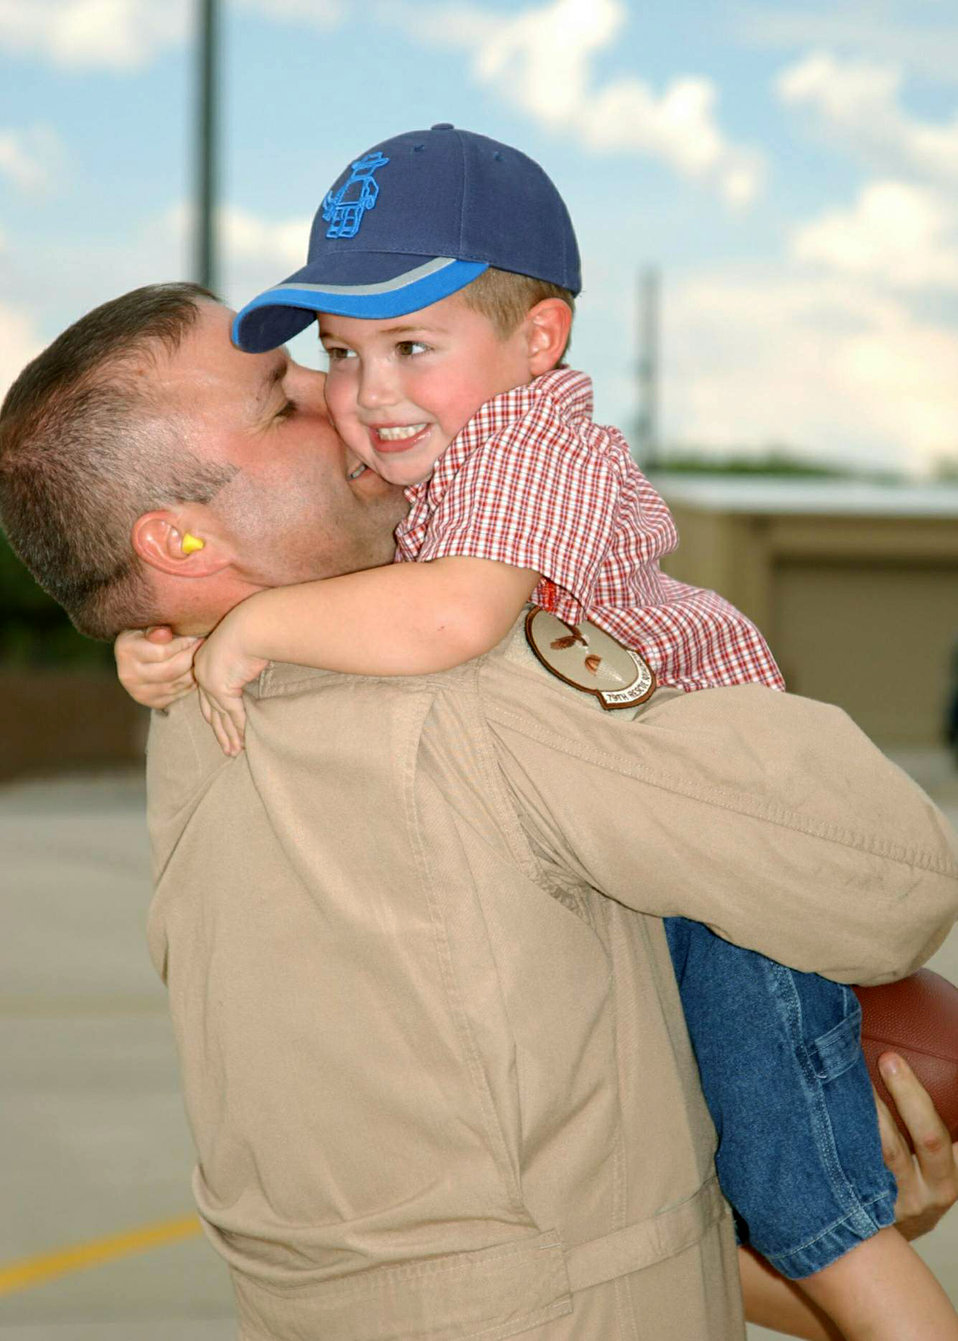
Reunited and it feels so good

DAVIS-MONTHAN AIR FORCE BASE, Ariz. -- Tech. Sgt. Montgomery DeCarlo is reunited with his son, Ethan, after returning Aug. 6 from a long deployment to Southwest Asia supporting Operation Enduring Freedom. Sergeant DeCarlo is assigned to the 79th Rescue Squadron here.